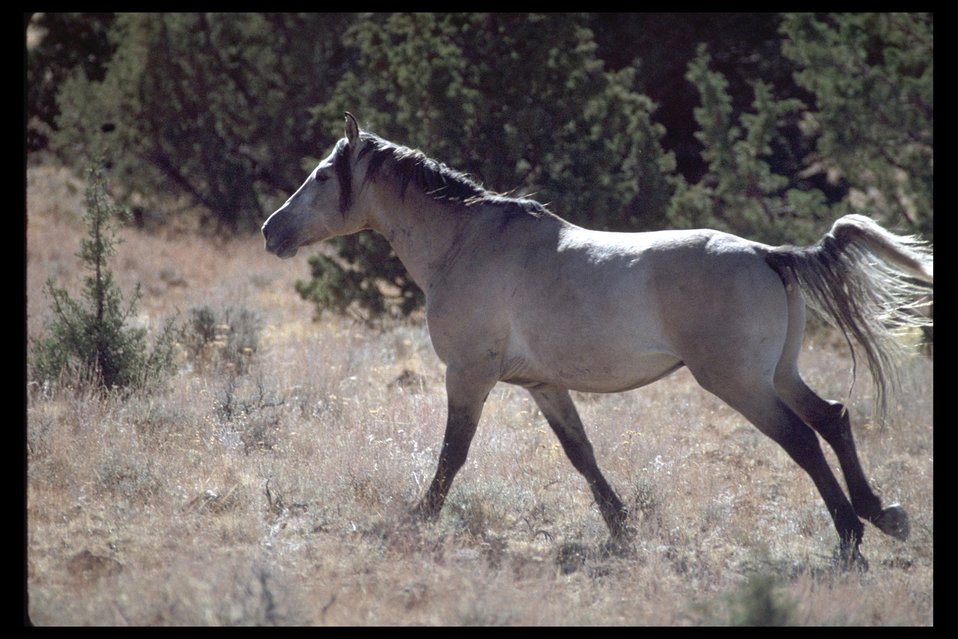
Kiger mustang stallion on Kiger HMA.